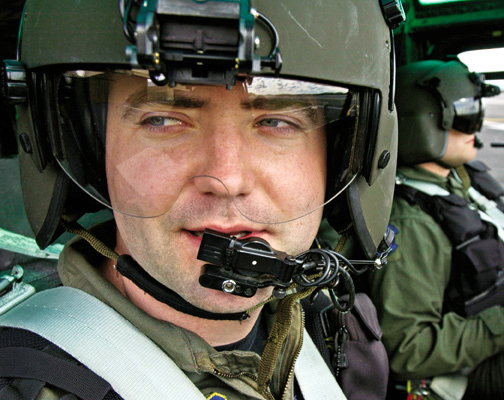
Third generation aviator continues the tradition

FAIRCHILD AIR FORCE BASE, Wash. -- Each time Capt. Sean Boldt takes off on a rescue mission, there is always the possibility of running into danger. However, the captain said he is proud and passionate about his flying and the adventure of the job. Captain Boldt is a UH-1N Huey pilot assigned to the 36th Rescue Flight here.